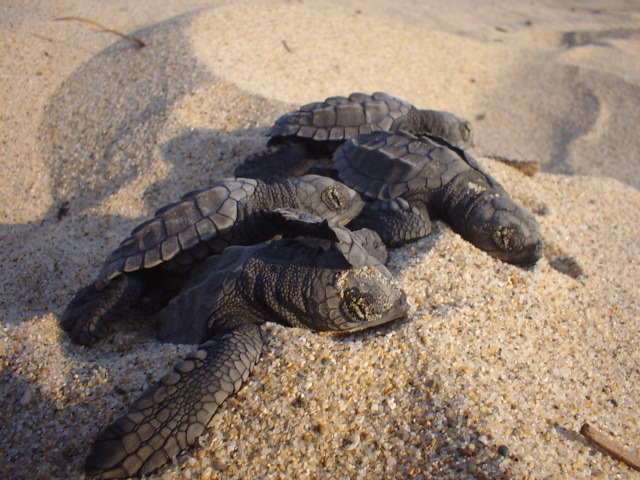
Marine Turtles